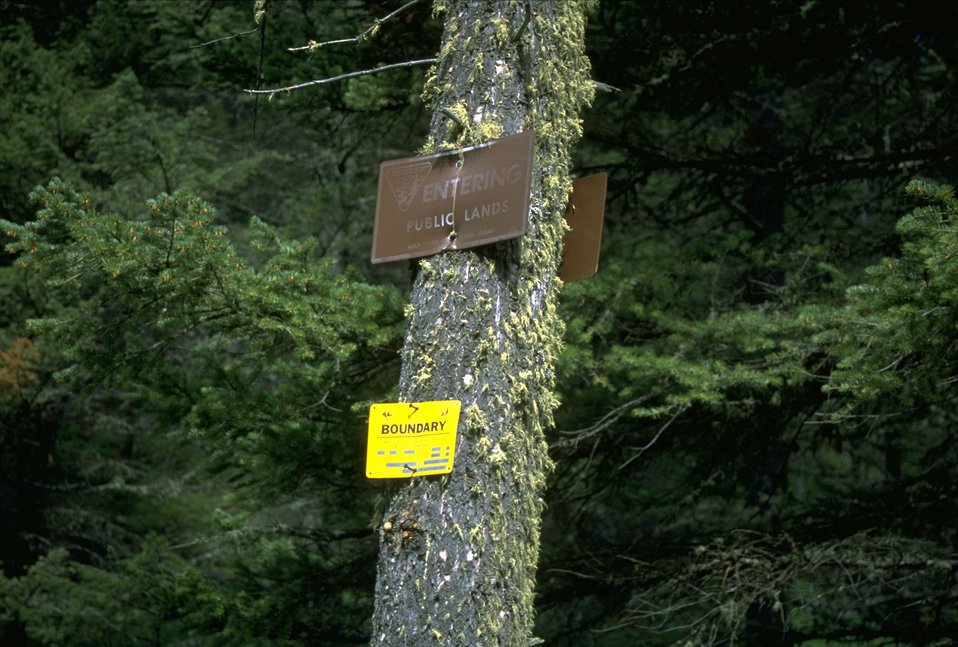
BLM signs in the Judith Mountians